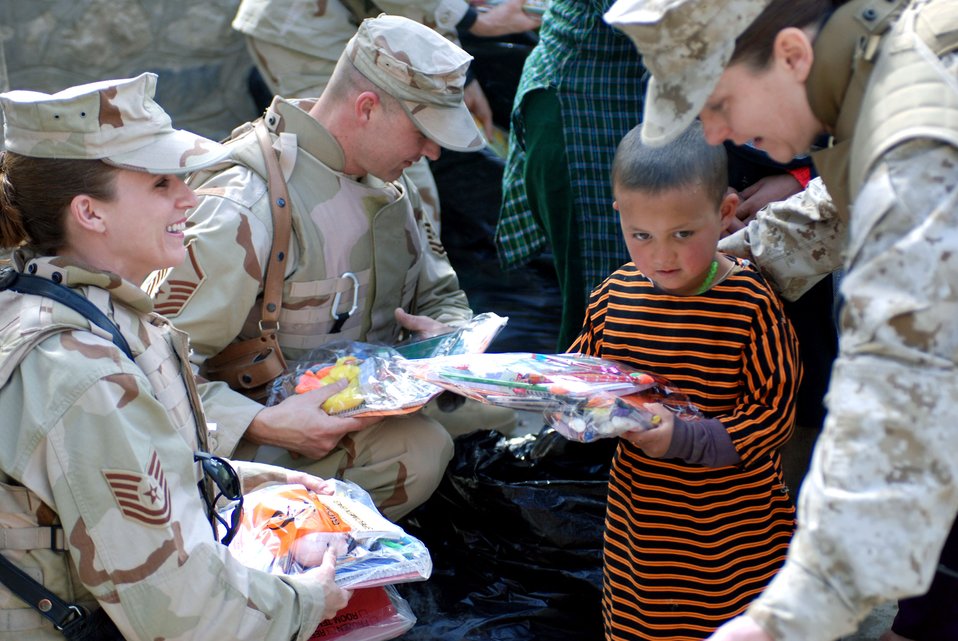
Afghan children get geared up for school

(From left) Tech. Sgt. Shelly Ward, Master Sgt. Shane Enos and Marine Corps Maj. Shawn Haney distribute school supplies to children March 8 at a school in downtown Kabul, Afghanistan. The team from the Combined Security Transition Command were part of a volunteer community relations trip sponsored by coalition forces.